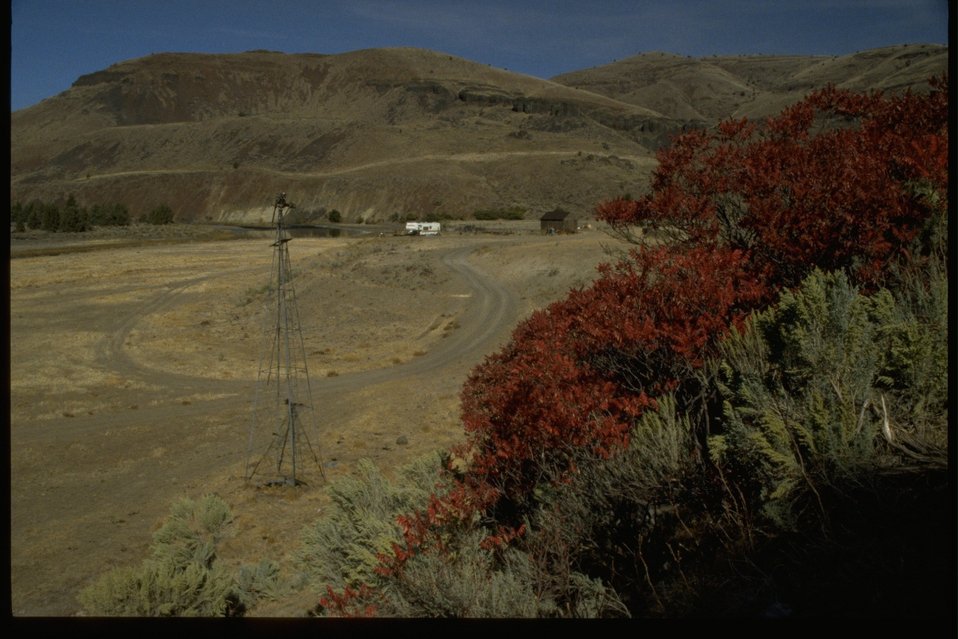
Private buildings along the John Day River near 30 Mile WSA. (1in a series of 3)